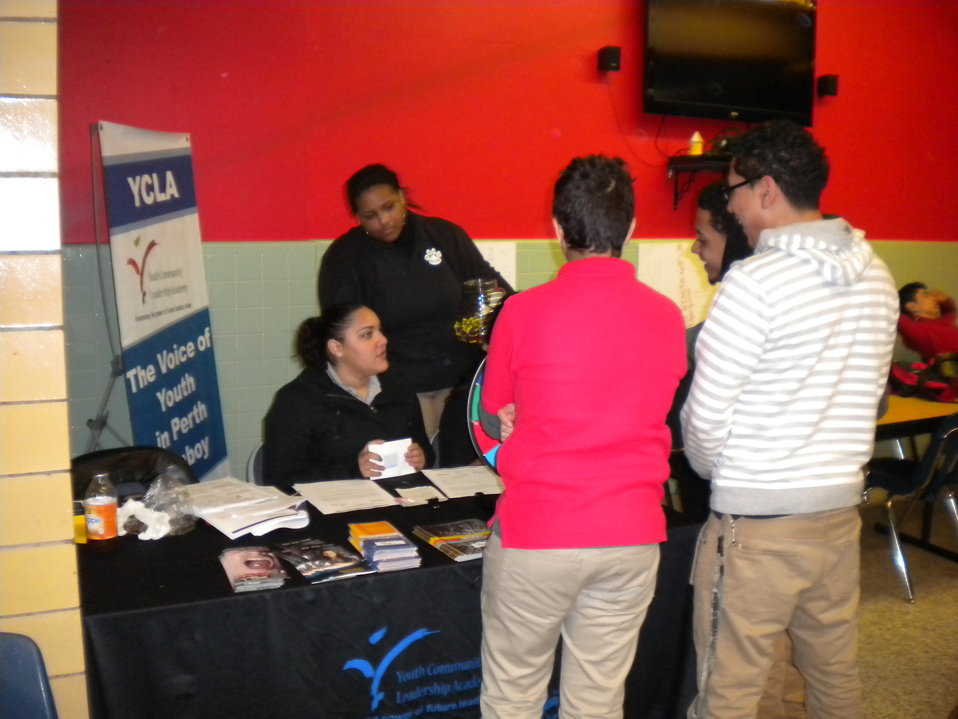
Perth Amboy High School

For National Drug Facts Week 2014 students from Perth Amboy High School, NJ quizzed their peers and handed out 'Drugs: Shatter The Myths' booklets.